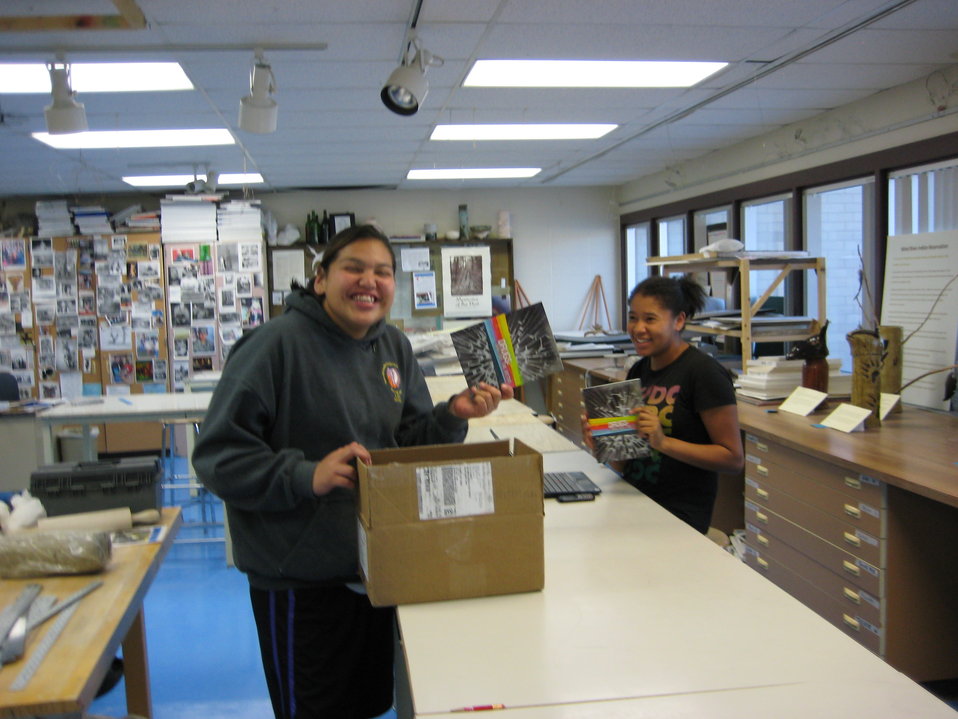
Wyoming Indian High School

High schooler’s from Wyoming Indian High excited about the Shatter the Myths booklet.